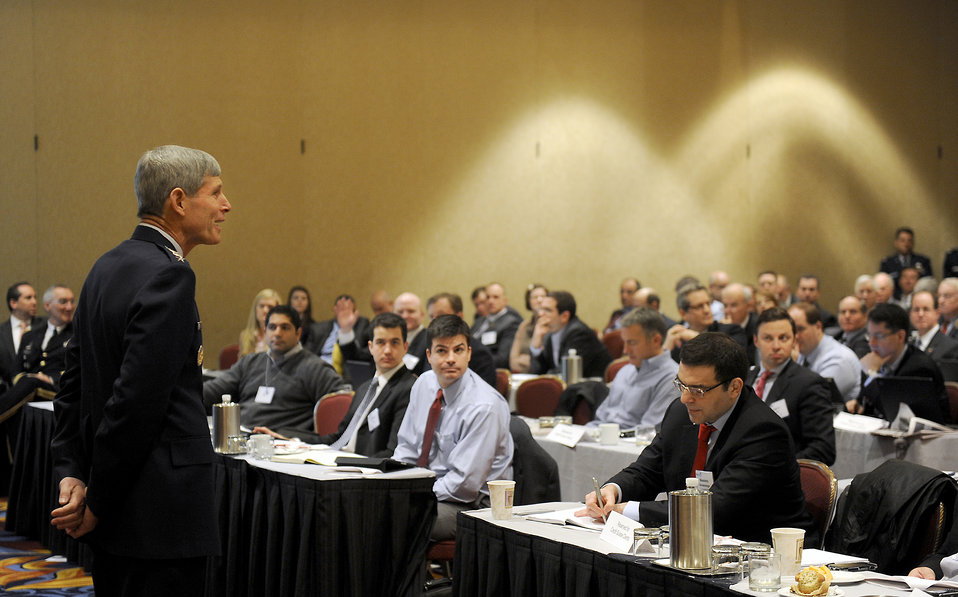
Defense Programs Conference

Air Force Chief of Staff Gen. Norton Schwartz speaks to attendees at the 2011 Defense Programs Conference in Arlington, Va., on March 2, 2011. General Schwartz said efficiency, agility and responsiveness are required during today's fiscally challenging times.